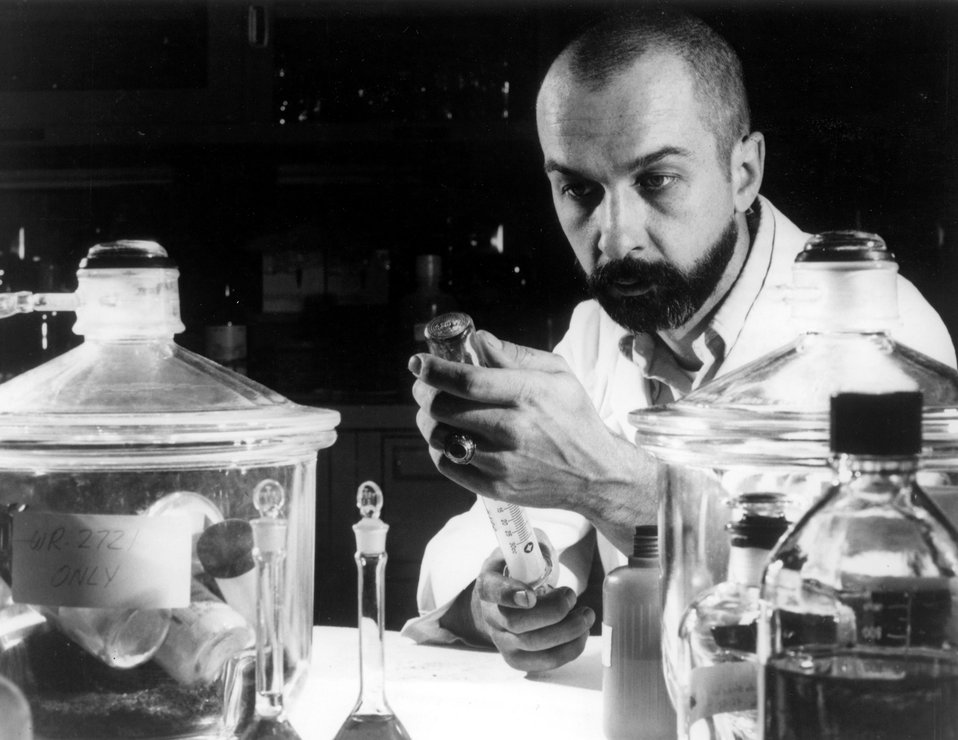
A drug which enables living tissue to withstand over twice the amount of radiation normally required to cause injury is being studied by Oak Ridge National Laboratory biologists to determine if it can be applied to cancer radiotherapy. c. 1974